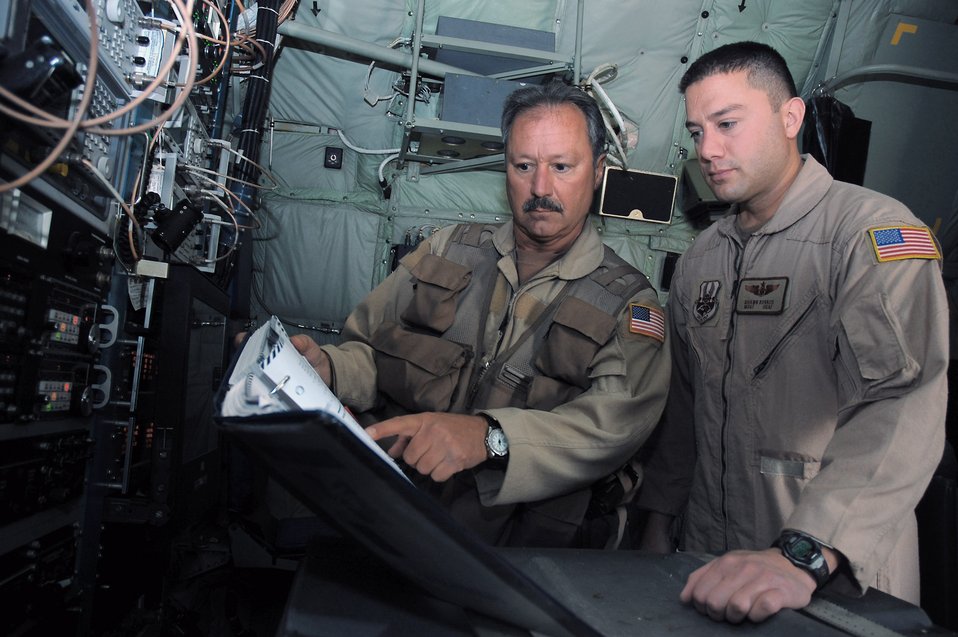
Heir apparent: Father, son deploy together

Senior Master Sgt. Michael Kovach (left) and his son, Master Sgt. Shawn Kovach, look through an EC-130J Commando Solo technical order manual while going over updated emergency procedures Nov. 26 in Southwest Asia. Both Airmen are assigned to the 43rd Expeditionary Electronic Combat Squadron and are deployed from the Pennsylvania Air National Guard's 193rd Special Operations Wing from Middletown, Penn.